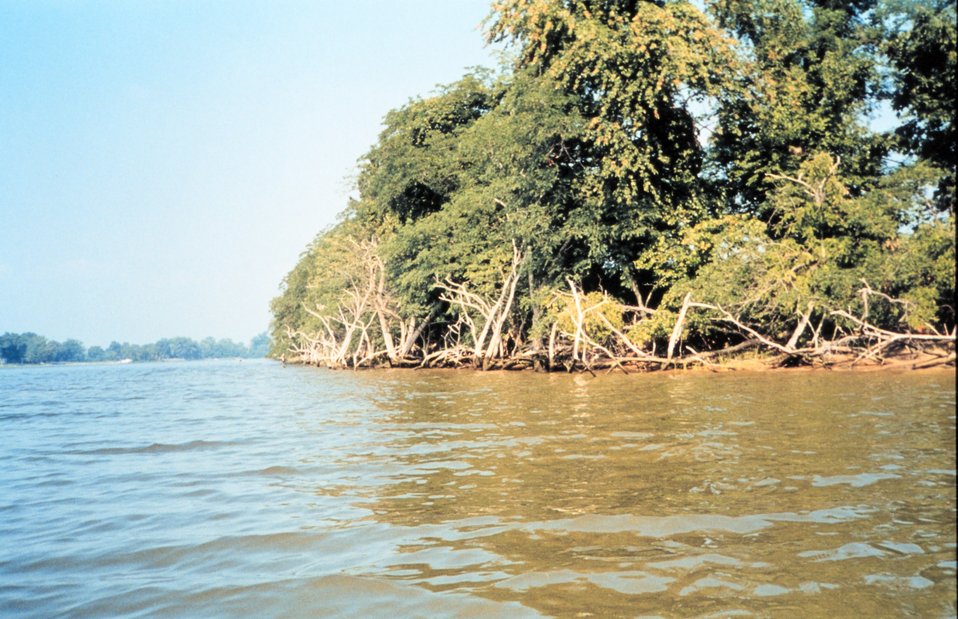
Dead trees provide evidence of erosion problems on Wye Island.